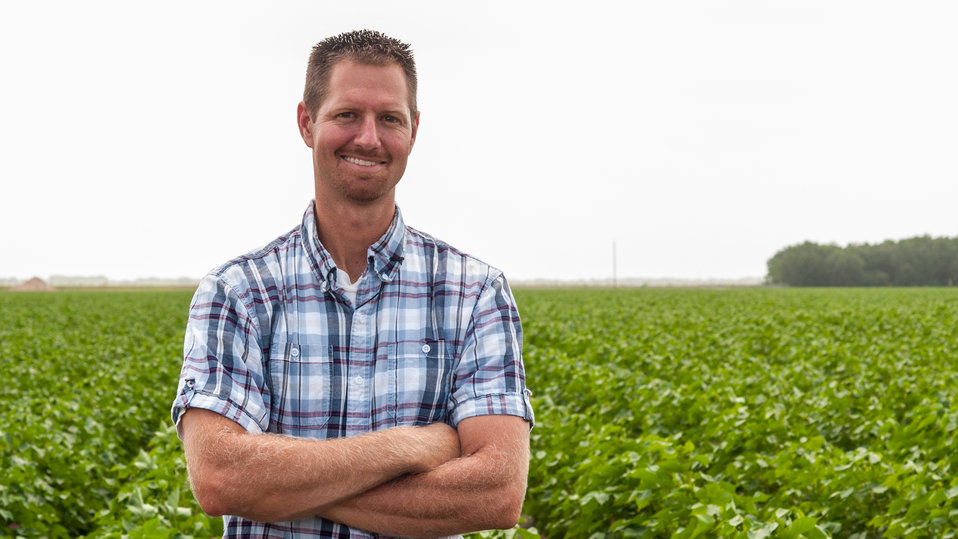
Michael Popp (pronounced Pope)stands in his field of cotton at Popp Farms 05 in El Campo, TX on Jun. 20, 2013. The family farm spans five generations on 2,400 acres of farmland. Michael chose farming after graduating from Texas A and M with a degree in Agriculture Economics and a Masters degree in Finance. The operations currently grow cotton and milo (grain sorghum) and are part of the United Agricultural Cooperative, Incorporated.